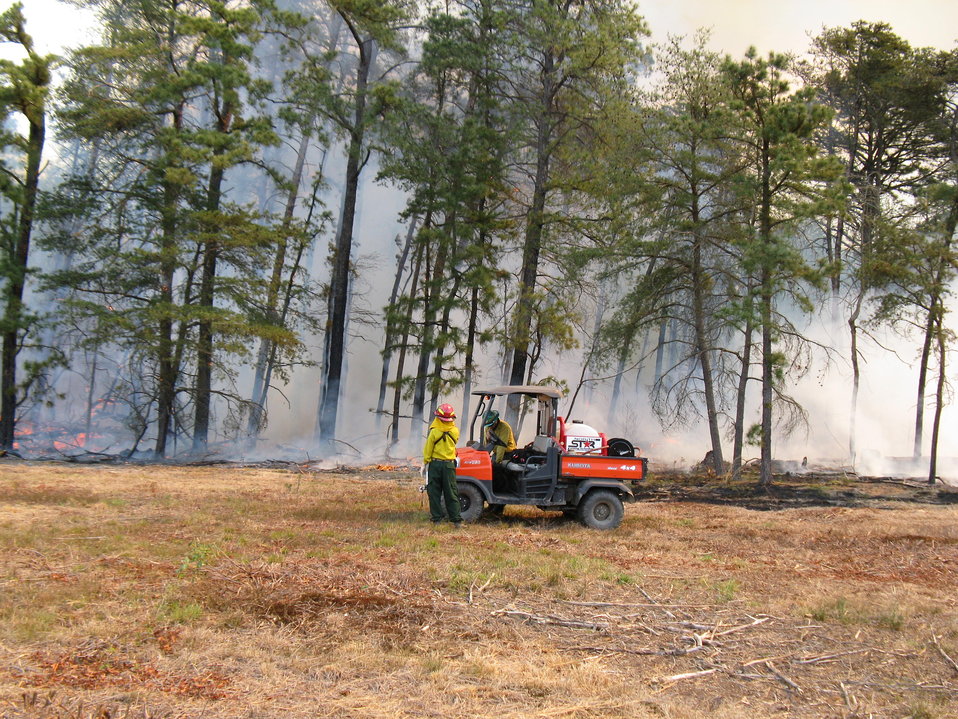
Scouting the Burn

Laurel, Maryland, April 5, 2012: Firefighters from Patuxent Research Refuge check a controlled burn in an oak/pine forest. The burn was done at Patuxent Research Refuge's Savannah Restoration Unit to increase refuge species and habitat diversity. Specifically, the refuge hoped to increase density and diversity of rare darkling beetles and forest floor plants.